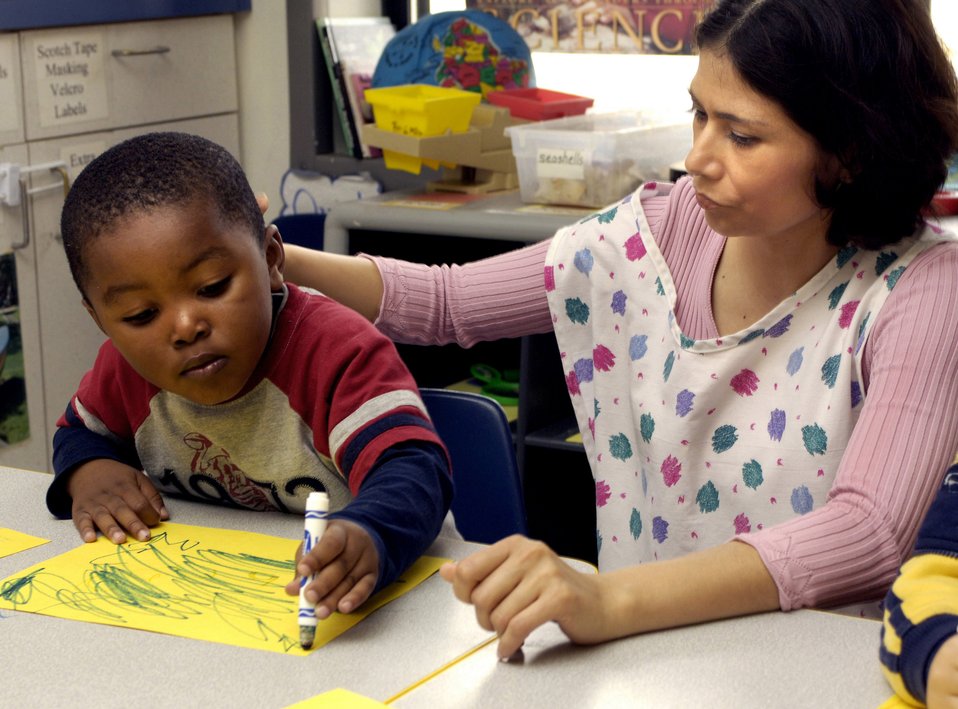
Art expression

KEESLER AIR FORCE BASE, Miss. (AFPN) -- Yvonte Larosier, 3, draws a picture of flying debris from Hurricane Katrina for Sandra Markland at the child development center Feb. 21. The children's drawings are displayed throughout the center as a means for them to express their feelings about the hurricane. Yvonte's mother is Staff Sgt. Lakeisha Larosier of the 81st Dental Squadron.